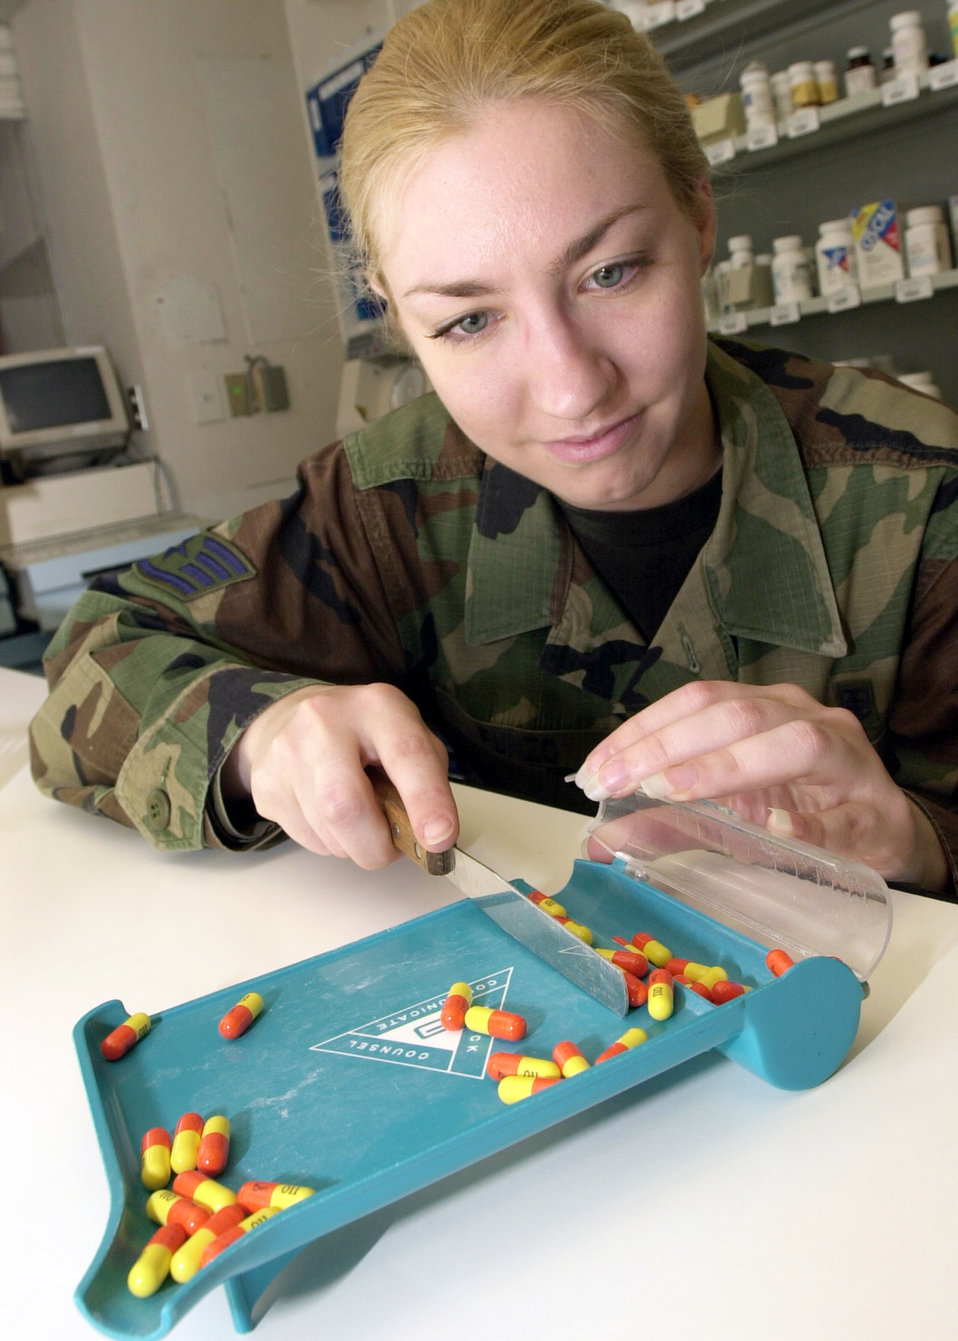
Just what the doctor ordered

AVIANO AIR BASE, ITALY -- Staff Sgt. Ida Punzo, a pharmacy technician with the 31st Medical Support Squadron, counts out tetracycline capsules before she dispenses them to a patient. The 31st Medical Support Squadron Pharmacy is responsible for over 70,000 prescriptions annually and 10,000 beneficiaries in the Aviano community.